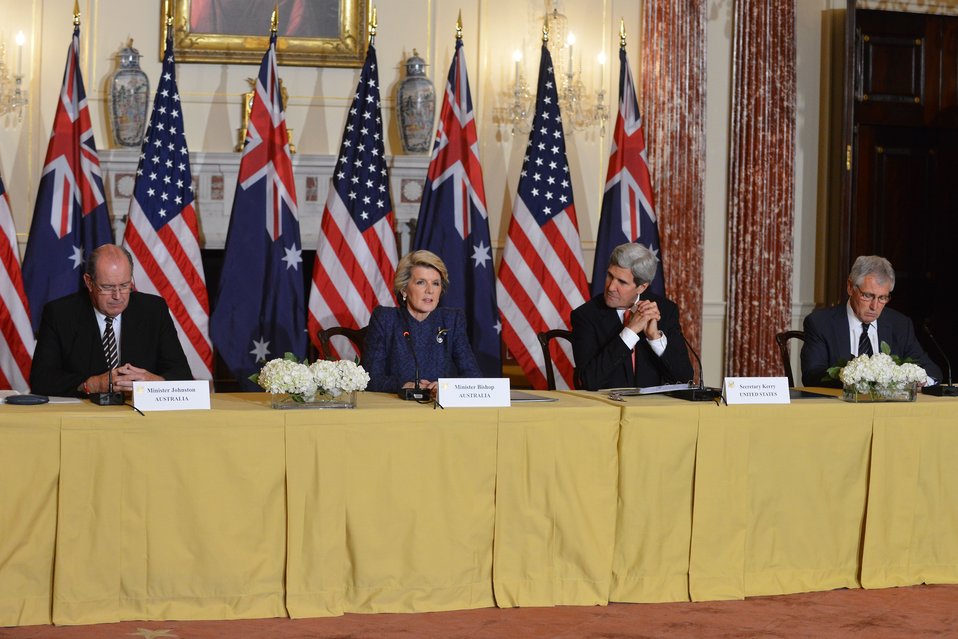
Secretaries Kerry, Hagel and Australian Ministers Bishop, Johnston Address Reporters

U.S. Secretary of State John Kerry, U.S. Secretary of Defense Chuck Hagel, Australian Foreign Minister Julie Bishop, and Australian Defence Minister David Johnston participate in the signing of a Statement of Principles and a joint press conference during the Australia-United States Ministerial Consultations at the U.S. Department of State in Washington, D.C., on November 20, 2013.